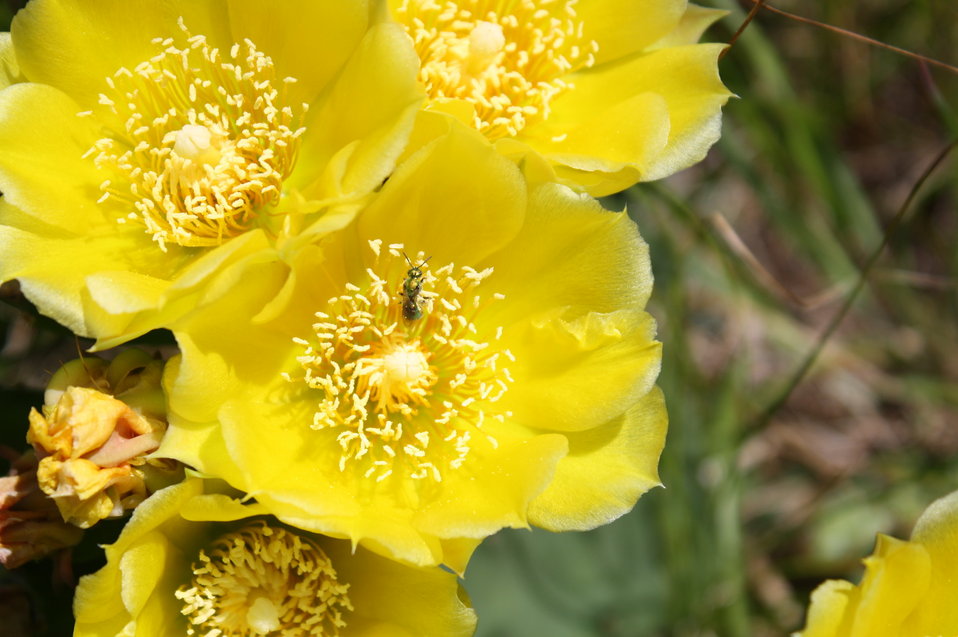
Prickly Pear

Photographed at Wertheim National Wildlife Refuge.